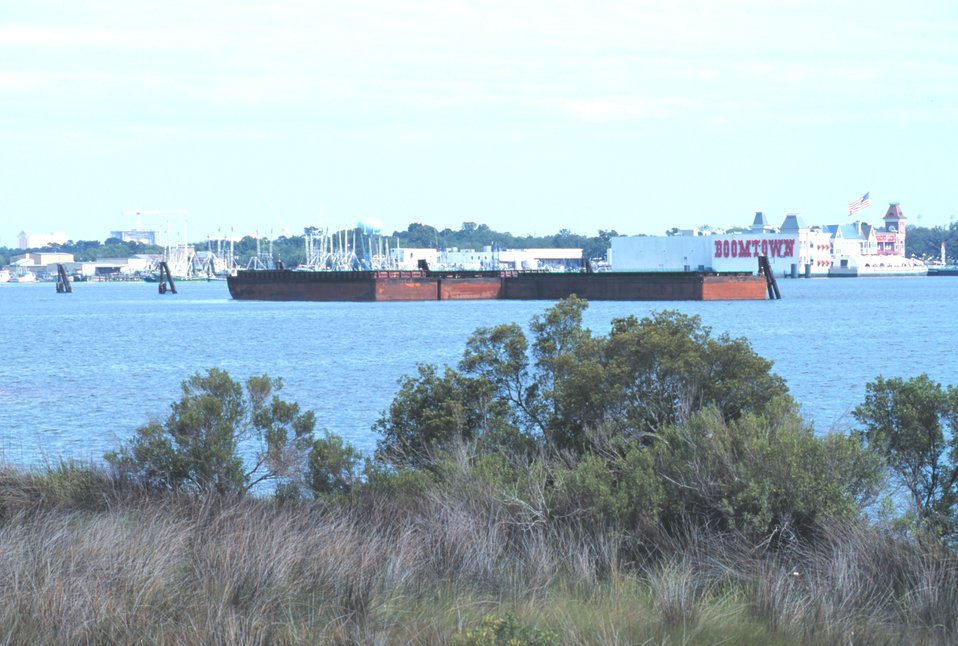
A scene along the Mississippi River